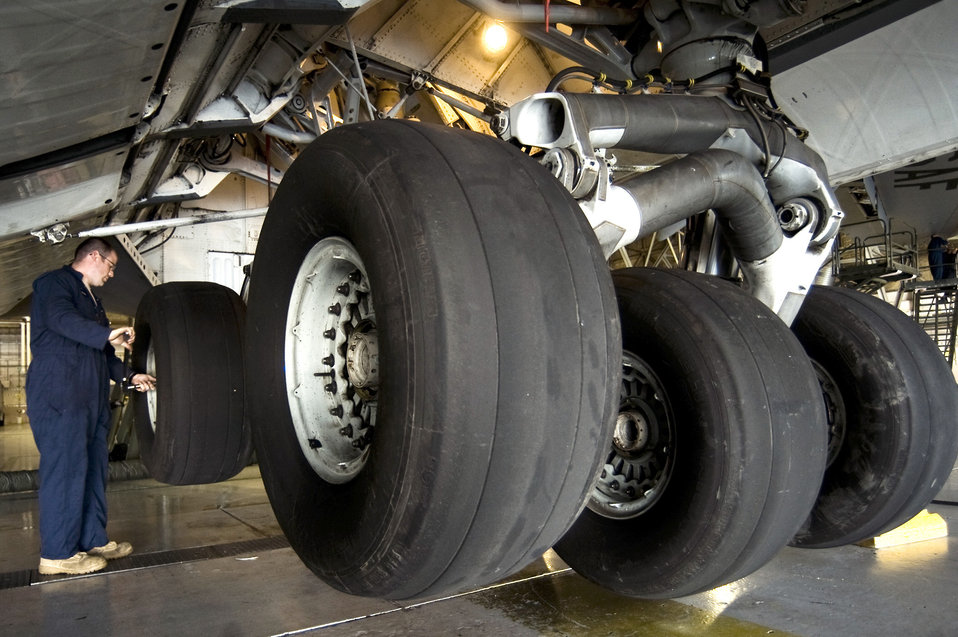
Maintenance Airmen keep C-17 wheels turning

Staff Sgt. Daniel McQuistion loosens the nuts on a tire on a C-17 Globemaster III as part of a home station inspection at Joint Base Lewis-McChord, Wash., Aug. 5, 2010. The maintainers can change 12 tires in a matter of a few hours.